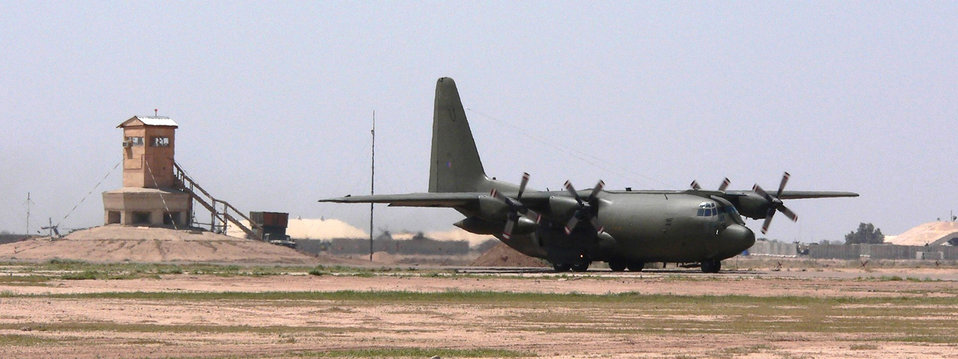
Airmen make most of temporary situation

BALAD AIR BASE, Iraq -- A C-130 Hercules passes by the temporary air control tower nicknamed the